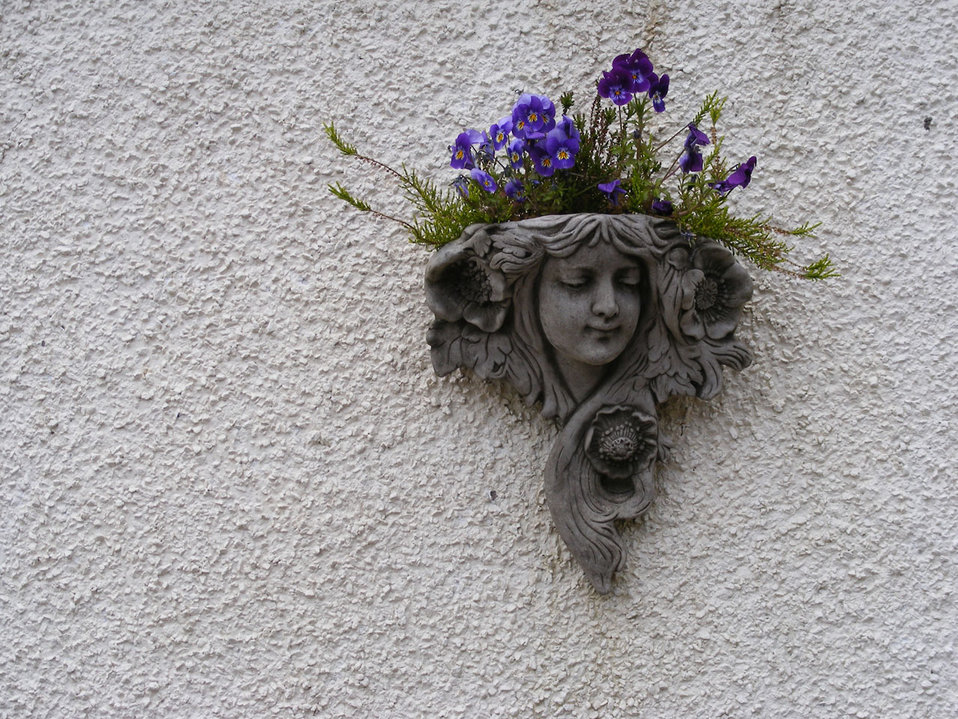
Wall flower decoration

Flower holder in the form of a girls head.